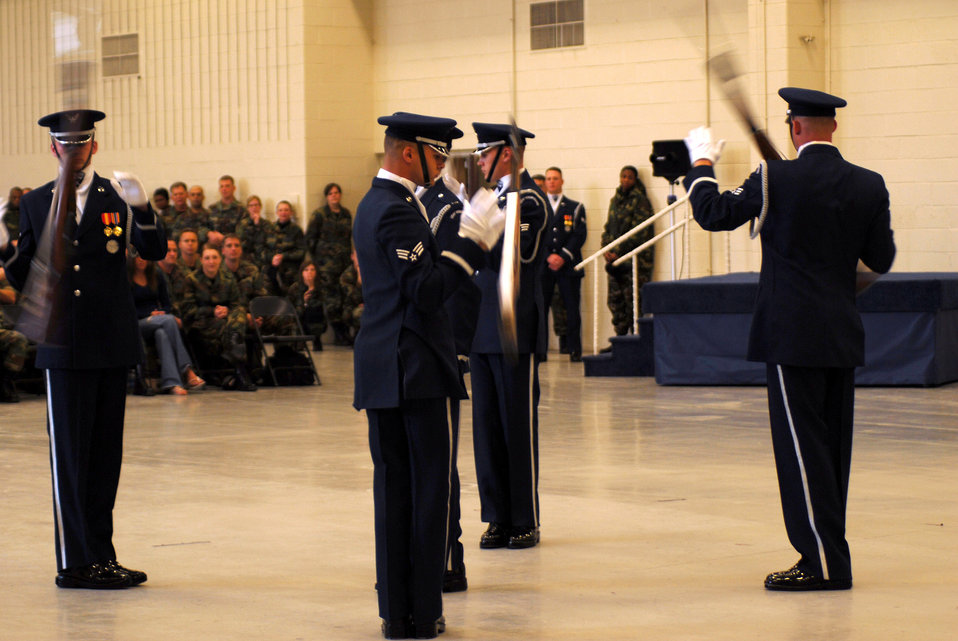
2007 Air Force Honor Guard

Air Force Honor Guard Drill Team members unveil their new four-man performance for their 2007 drill season at Bolling Air Force Base, D.C., on Nov. 21. The team spent a month at Lackland Air Force Base, Texas, practicing and perfecting the routine.